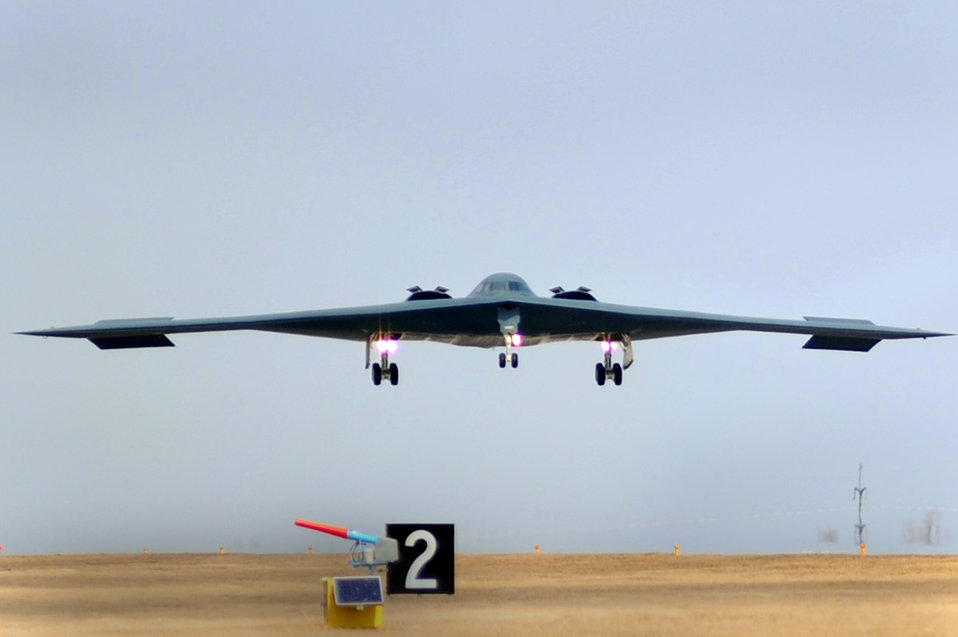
Operation Odyssey Dawn

WHITEMAN AIR FORCE BASE A B-2 Stealth bomber returns from a mission March 20, 2011.